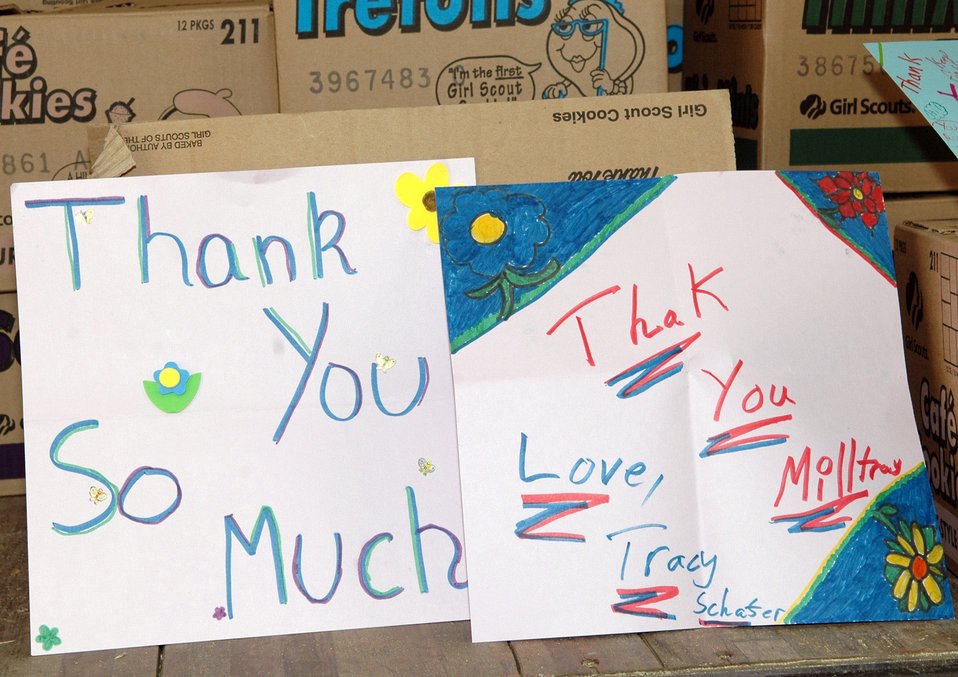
Girl Scouts give thanks, cookies to deployed servicemembers

The Girl Scouts with the Inland Empire Council collected more than 9,600 boxes of cookies through Operation Troop to Troop and sent thank you letters April 23 from the Girl Scout Troop 333 near Spokane, Wash. The cookies, along with posters and letters, will be sent to deployed servicemembers to thank them for serving.